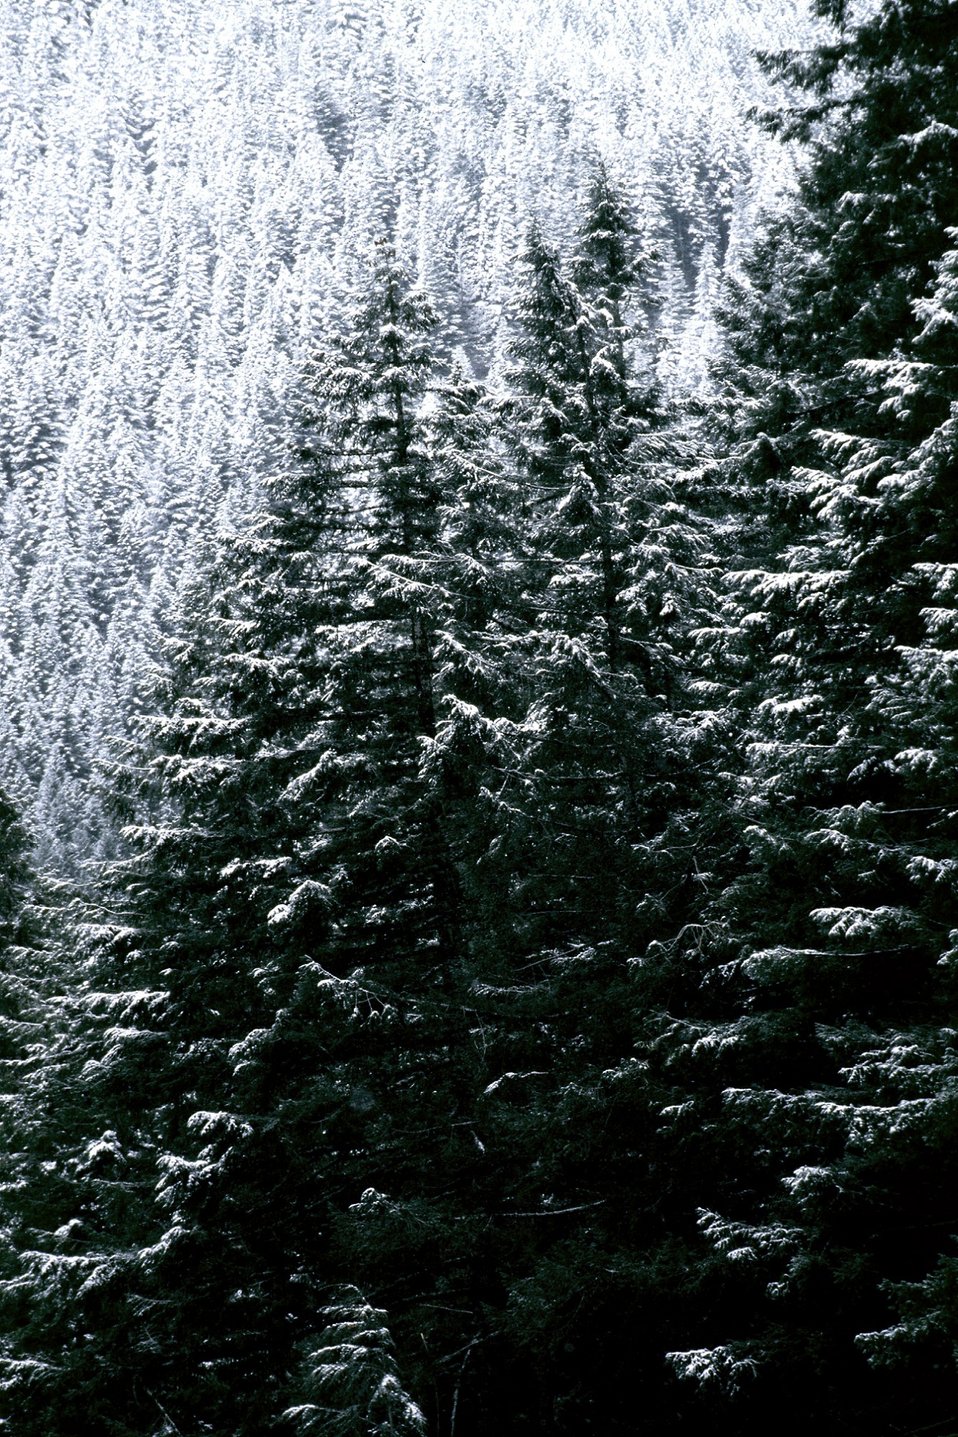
Mid Winter forest scene in the Mollala Corridor.